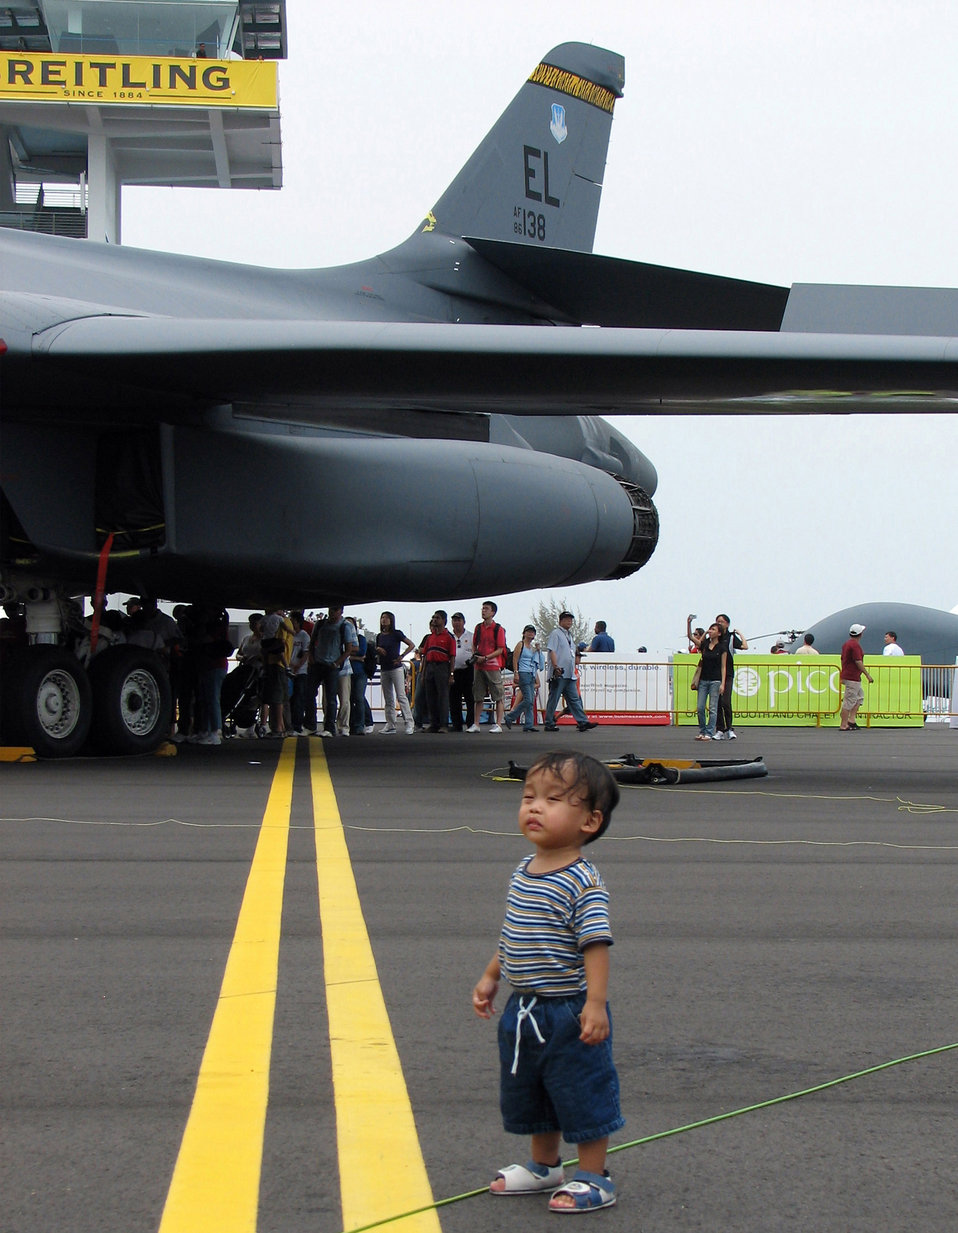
That's a big plane

During a public day Feb. 23 at the 2008 Singapore Air Show, 18-month-old Aryandana Yudono enjoys all the aircraft on display with his parents nearby.